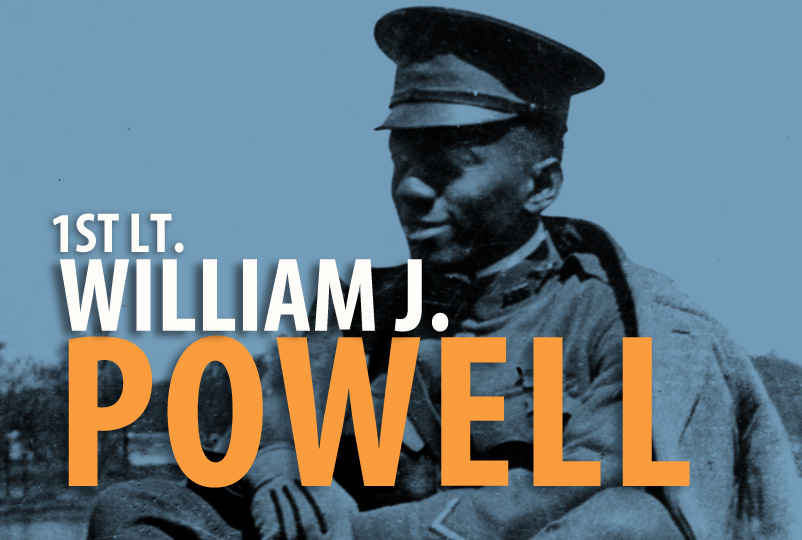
1st Lt. William J. Powell